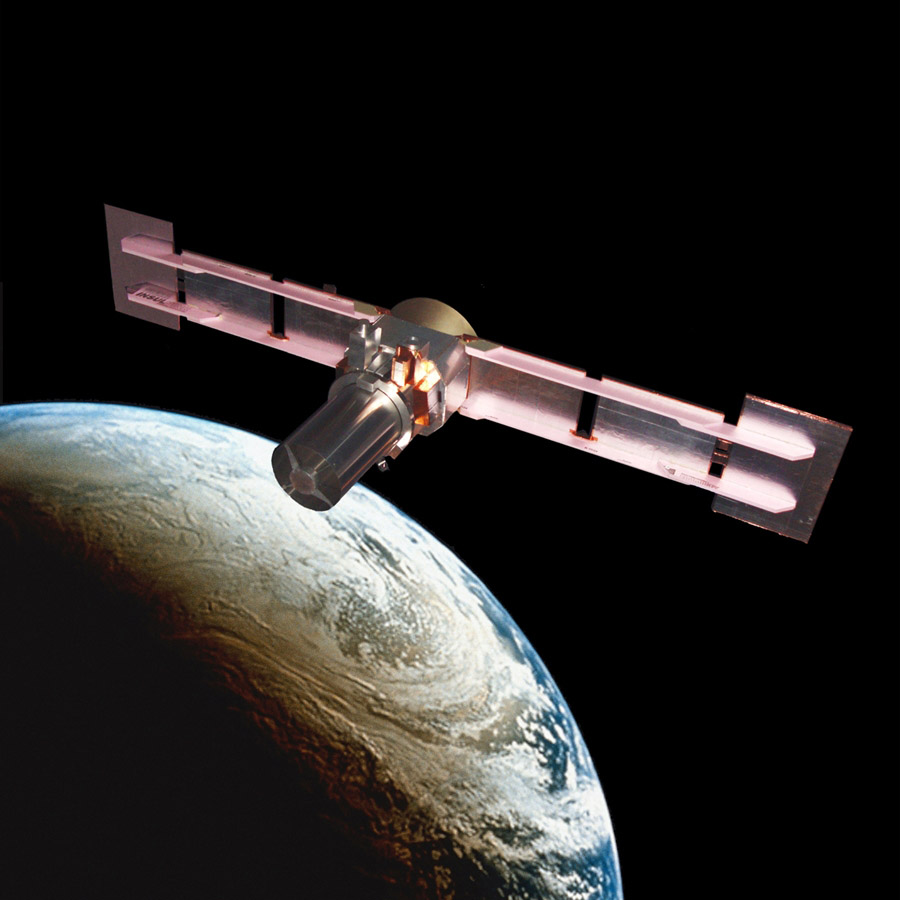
6th SOPS delivers critical weather data to warfighters

The 6th Space Operations Squadron at Schriever Air Force Base, Colo., will shift its mission focus from the Defense Meteorological Satellite Program to the National Polar-Orbiting Environmental Satellite System beginning in 2013. Pictured here is an NPOESS satellite.